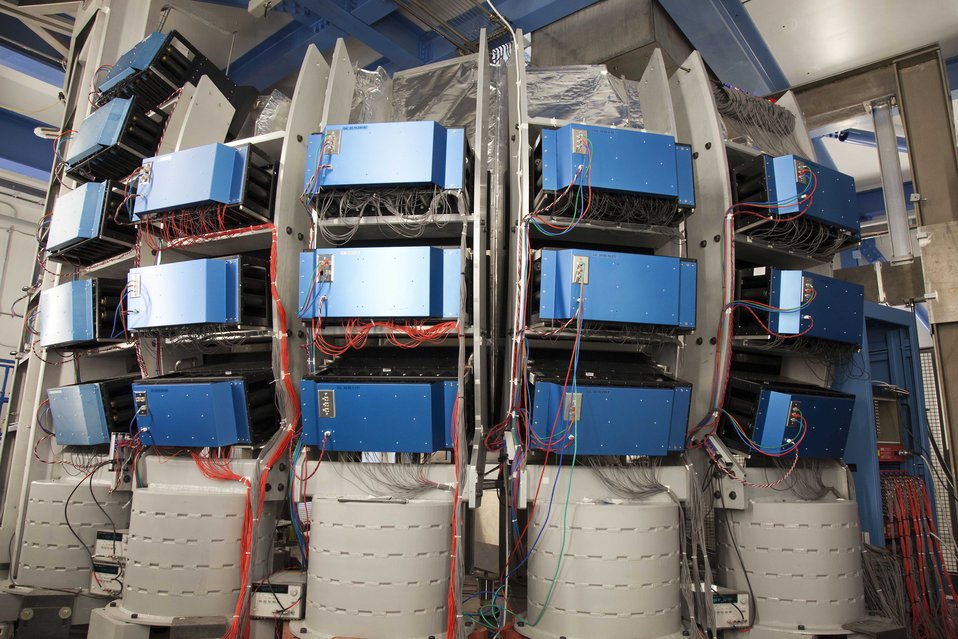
Detector array at the Powder Diffractometer at Oak Ridge National Laboratory's Spallation Neutron Source (SNS) Beam Line BL-11A.

POWGEN is a general-purpose powder diffractometer useful for a wide range of structural studies. The Spallation Neutron Source (SNS) is an accelerator based neutron source in Oak Ridge, Tennessee. The SNS provides the most intends pulsed power neutron beams in the world for scientific research and industrial development.